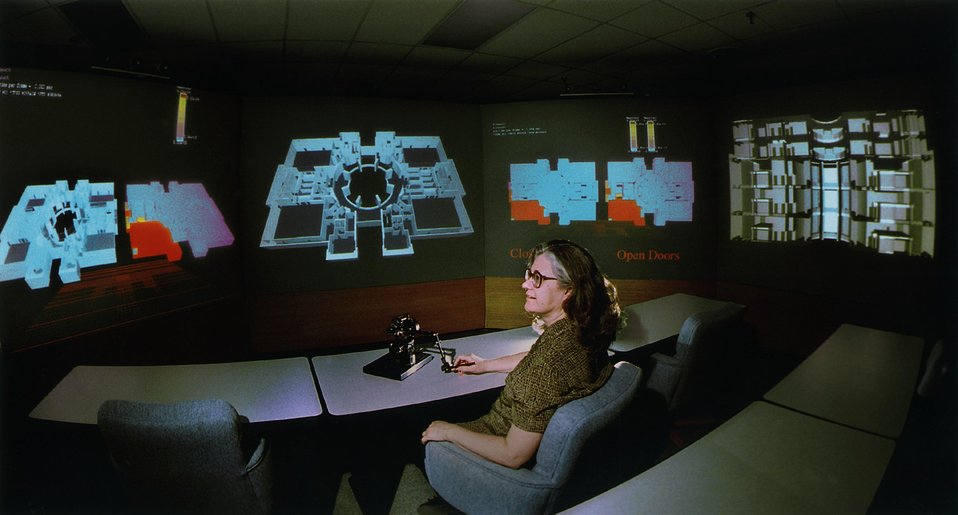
SANDIA SCIENTIST TAKES HELM AT THE CONTROL CONSOLE IN THE ILAB, THE INTERACTION LABORATORY.
NEW DATA VISUALIZATION FACILITIES SUCH AS THE ILAB PROVIDE SANDIA'S SCIENTISTS AND ENGINEERS AN UNPRECEDENTED ABILITY TO VISUALIZE COMPLEX DATA SETS AND TO COLLABORATE ON WEAPONS DESIGNS AND OTHER ADVANCED ENGINEERING PROJECTS WITH REMOTELY LOCATED TEAM MEMBERS. THESE CAPABILITIES ARE MADE POSSIBLE THROUGH THE INTEGRATION OF MODERN PRODUCT DESIGN TOOLS, POWERFUL VISUALIZATION RESOURCES, AND STATE-OF-THE-ART VIDEO TELECONFERENCING TECHNIQUES.